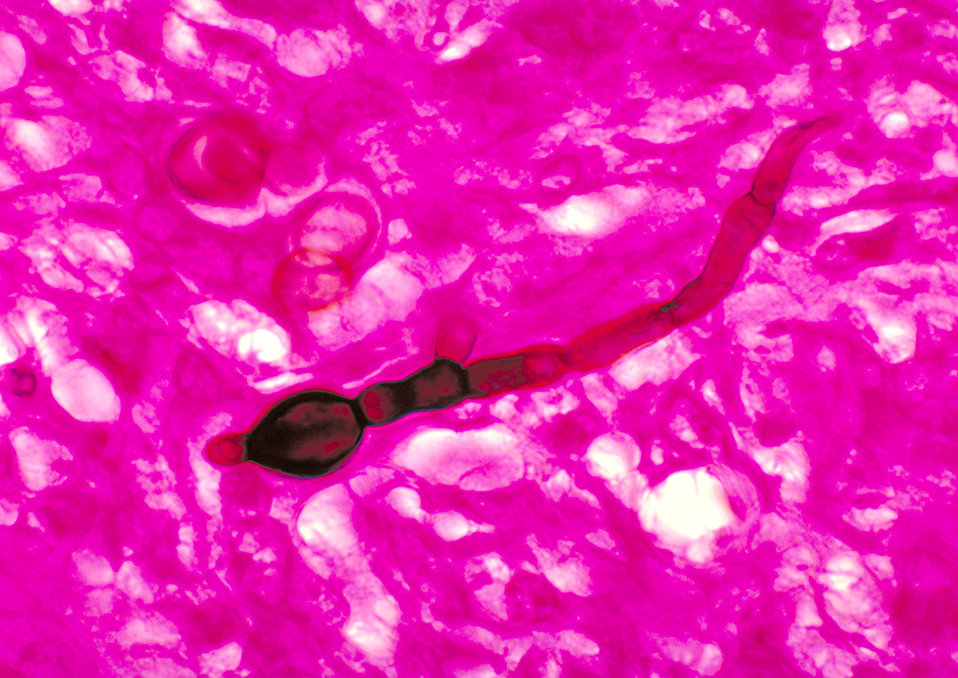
This micrograph shows histopathologic changes that reveal the presence of the fungal agent Blastomyces dermatitidis.